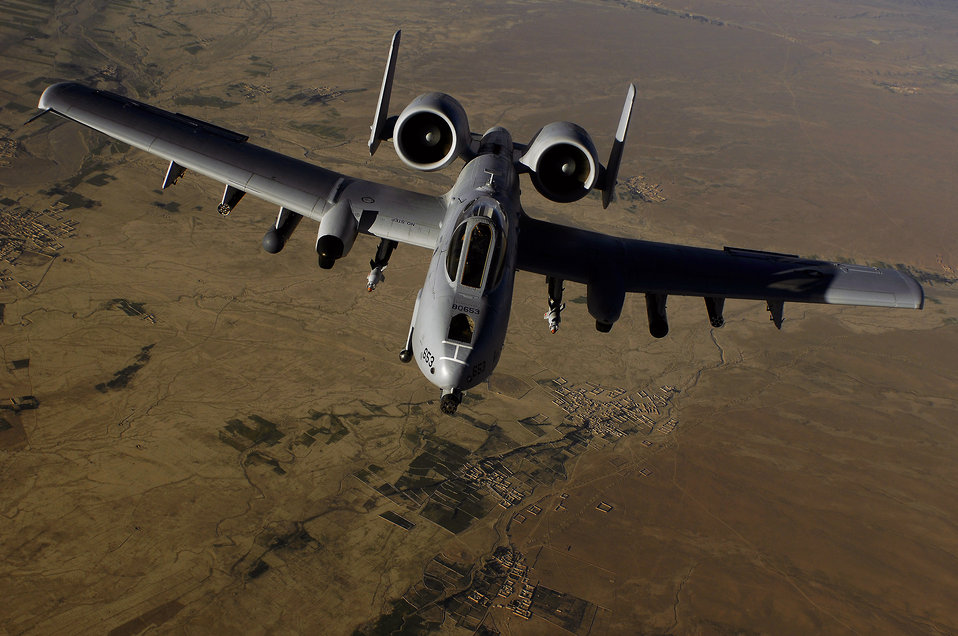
June 2 airpower summary: A-10 hits target

An Air Force A-10 Thunderbolt II aircraft moves into position to receive fuel May 29 from a KC-135 Stratotanker during a mission over Afghanistan.